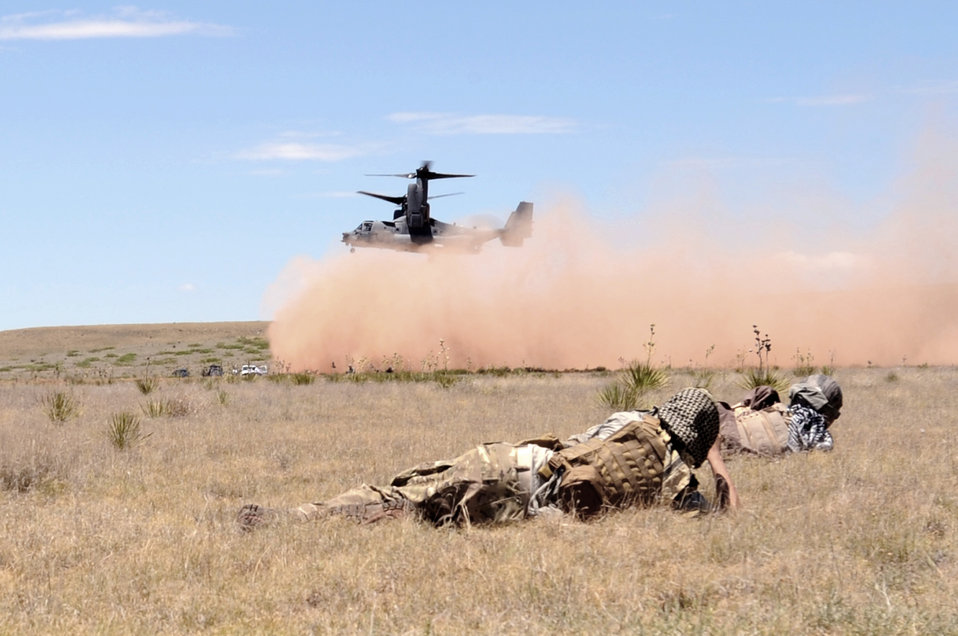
Cannon capabilities exercise

A CV-22 Osprey lands during a capabilities exercise as opposition forces look on June 26, 2010, at Cannon Air Force Base, N.M.